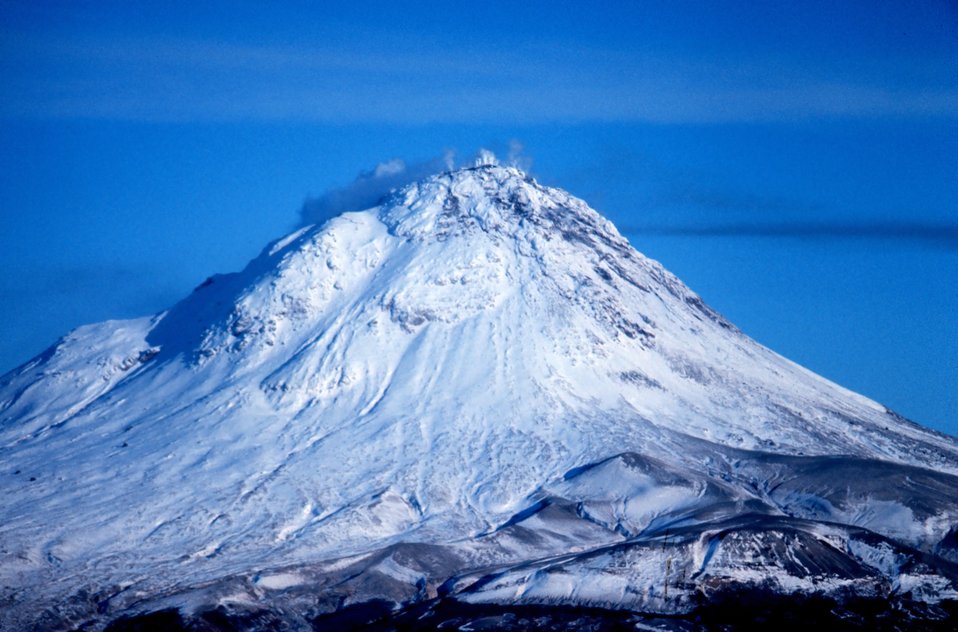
Augustine Volcano.